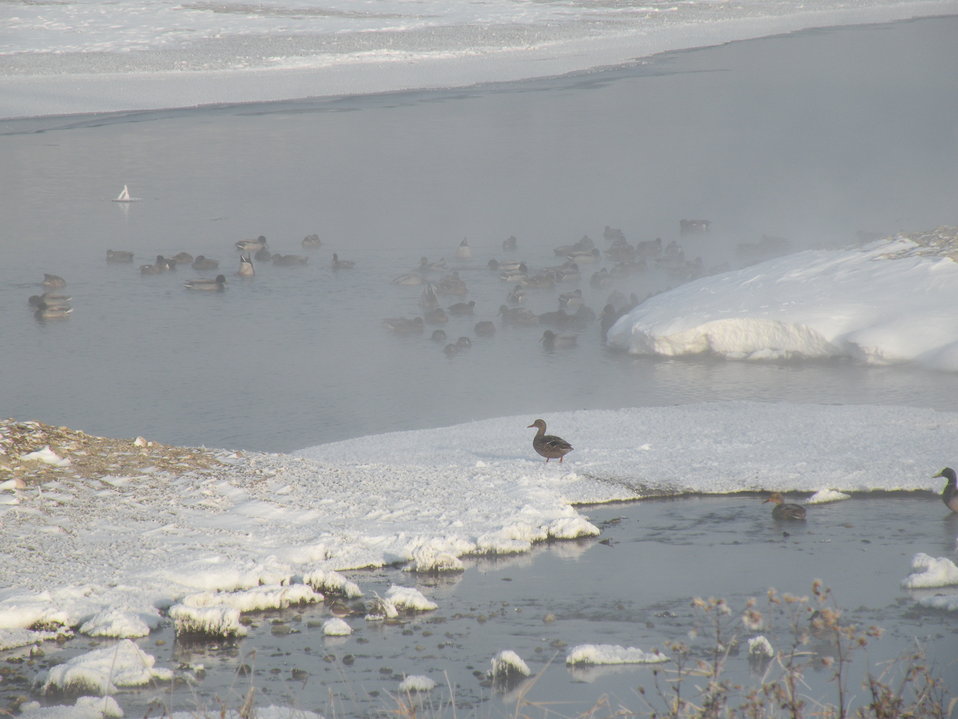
Open Water on the Refuge

Warm water spring steaming in cold air, allowing waterfowl a place to feed and rest at Lee Metcalf National Wildlife Refuge in Montana.